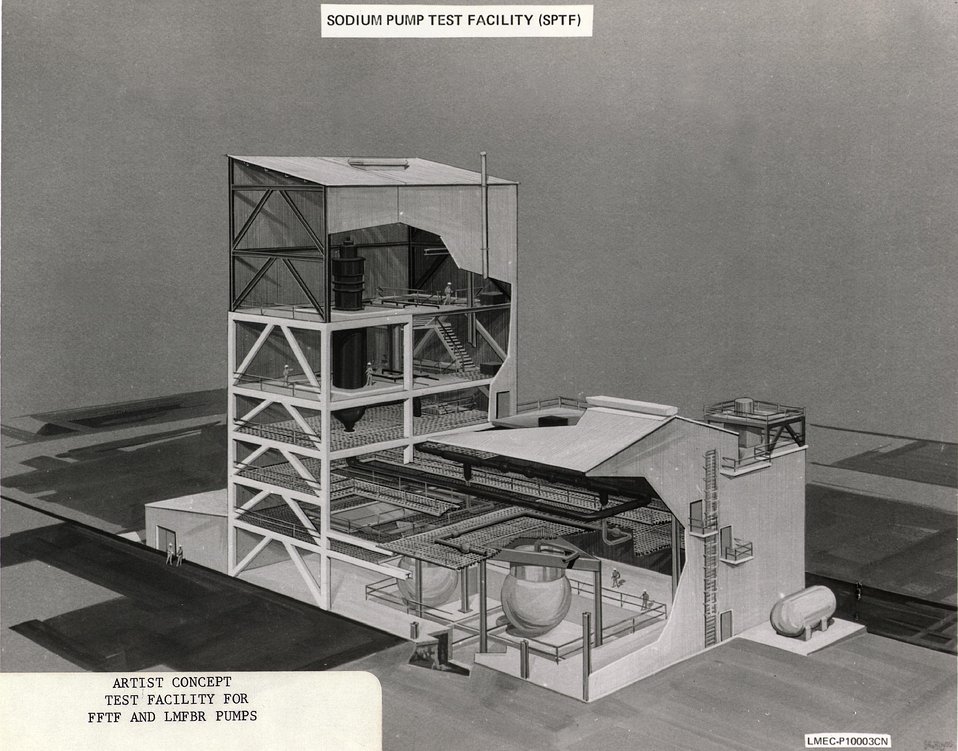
Artist concept. Test facility for FFTF and LMFBR pumps. c. 1970.